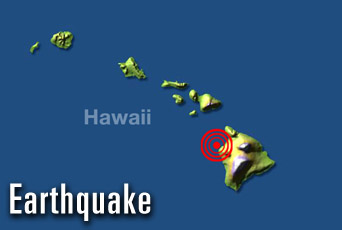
Earthquake powers down Hickam, Hawaii

A 6.6-magnitude earthquake shook Hawaii at 7:07 a.m. PDT Oct. 15. The quake caused loss of power for 12 hours at Hickam Air Force Base. There were some mudslides and damage to buildings on the islands.